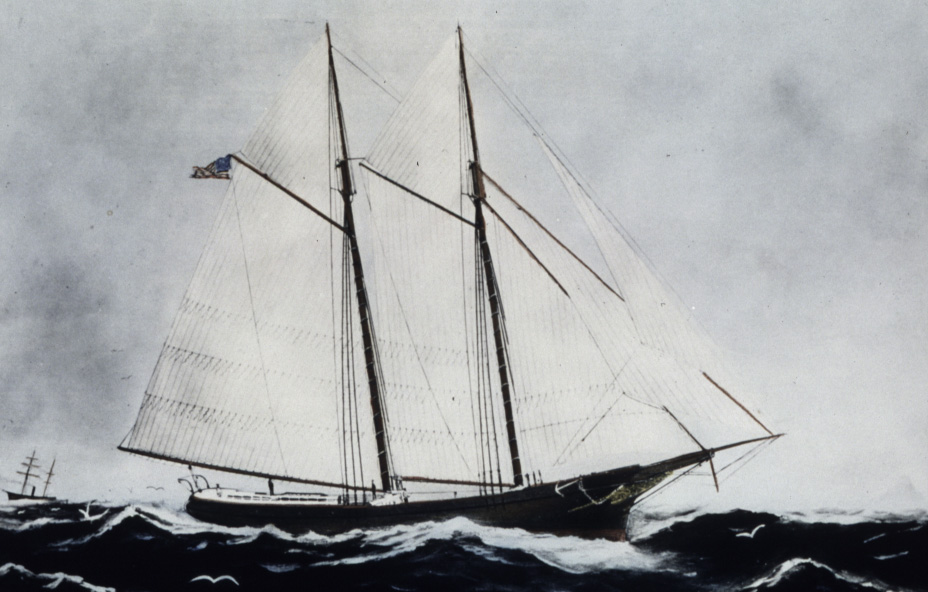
Coast and Geodetic Survey Schooner YUKON. In service 1873-1894. One of earliest vessels to work in Alaskan waters